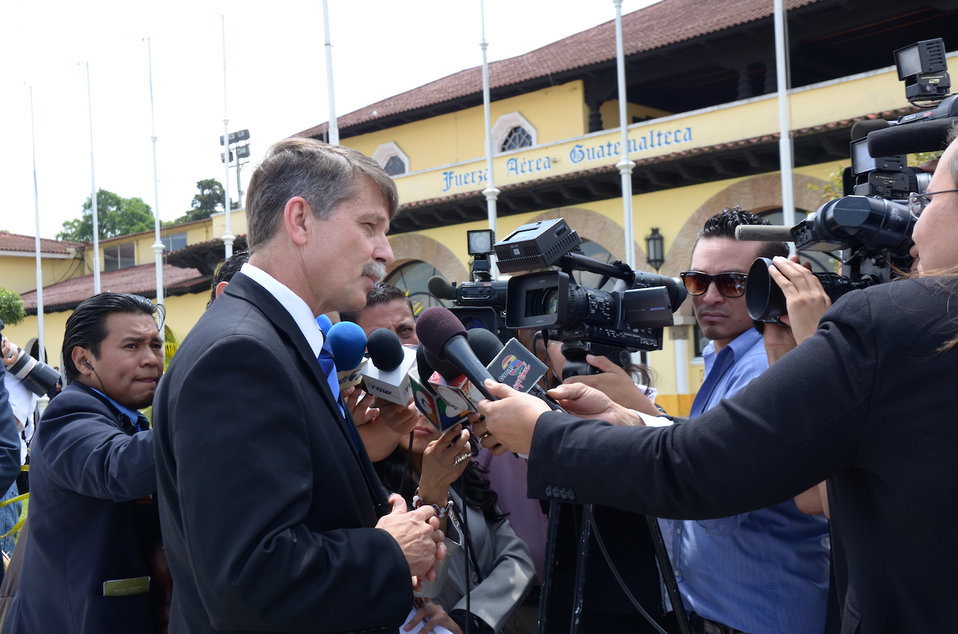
Ambassador McFarland Speaks With the Press

U.S. Ambassador to Guatemala Stephen G. McFarland speaks with press prior to U.S. Secretary of State Hillary Rodham Clinton's arrival to Guatemala City, Guatemala, on June 22, 2011.